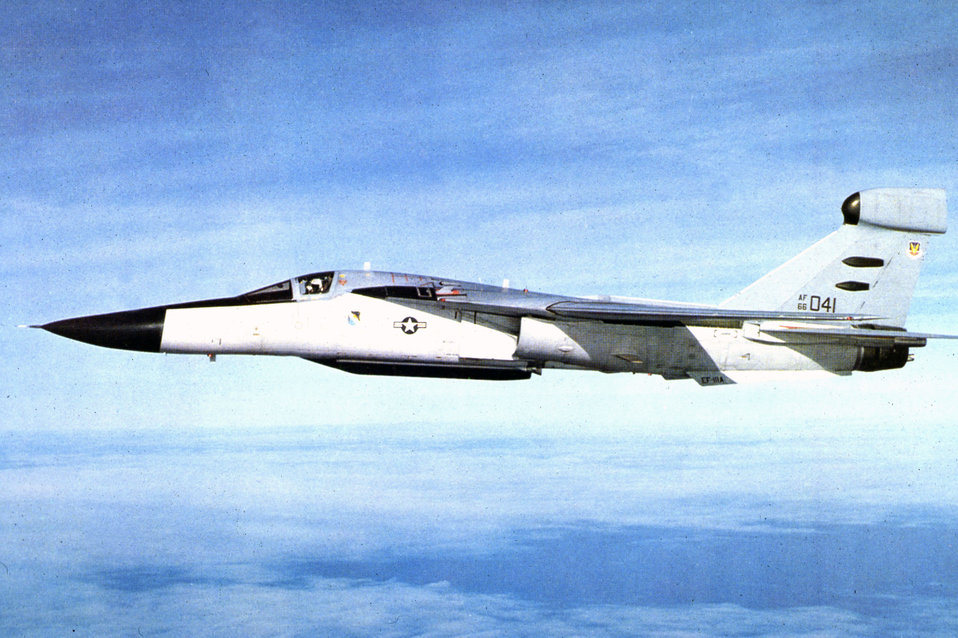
EF-111 Raven

1980s -- The EF-111 Raven flies a training mission October 1987.